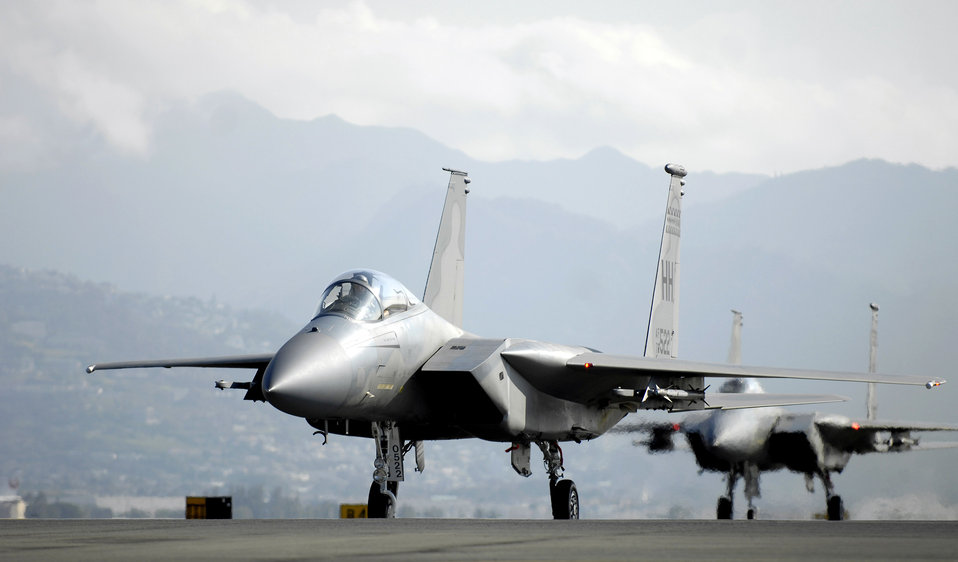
Eagles soar again

F-15 Eagles taxi on the flightline after flying a mission Jan. 9 at Hickam Air Force Base, Hawaii. The F-15s, from the 199th Fighter Squadron of the Hawaii Air National Guard, have not flown since Air Force officials grounded the F-15 fleet Nov. 3, 2007. Air Combat Command officials cleared a portion of its F-15 A through D models to begin flying today.